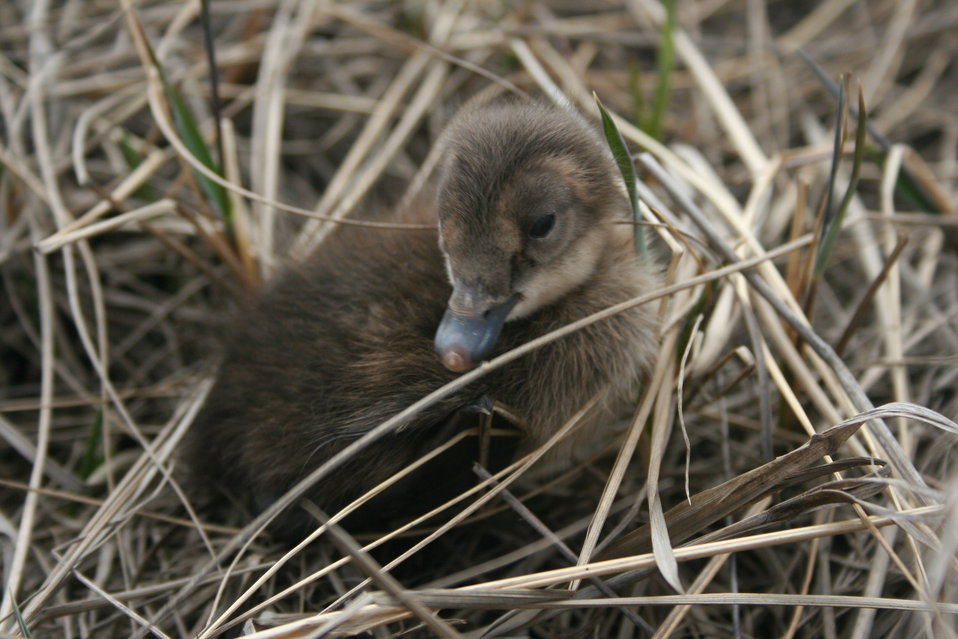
Spectacled eider duckling

USFWS Yukon Delta NWR
Even the ducklings have spectacles!!